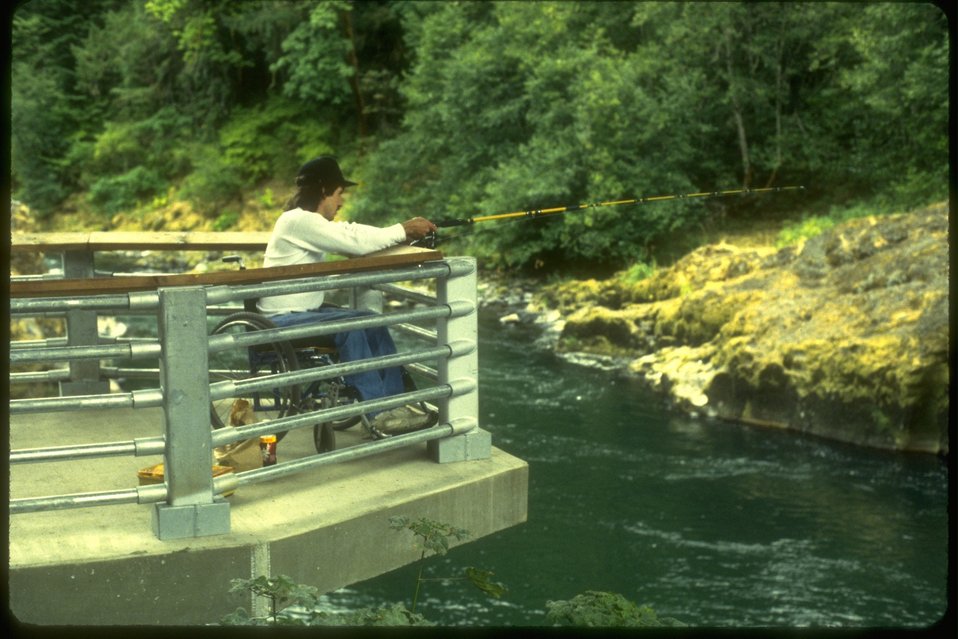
Disabled Fishing Platform for wheel-chair accessability.